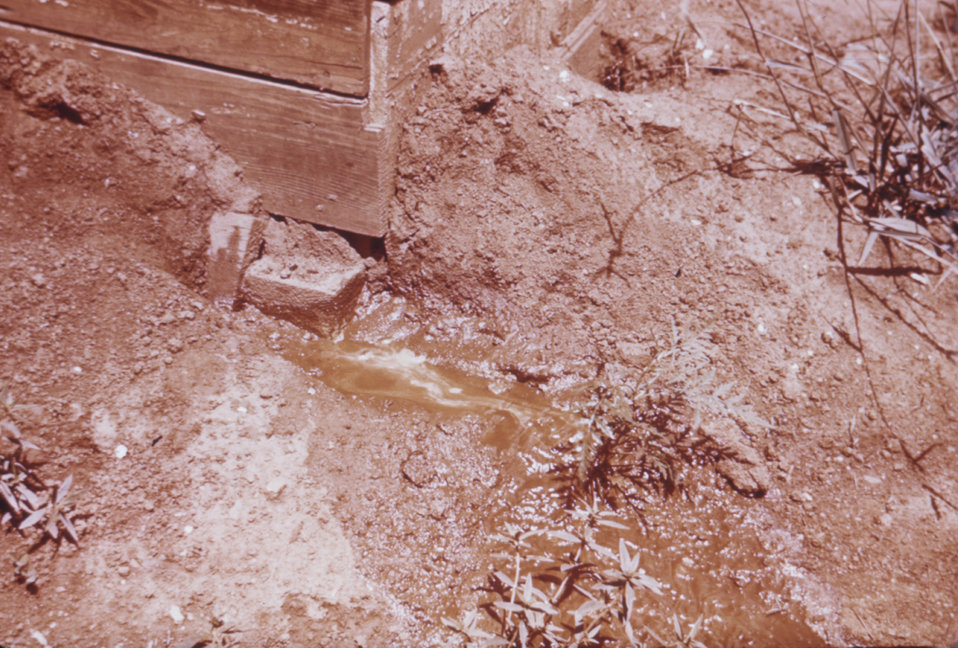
This was part of a series used to familiarize public health inspectors with sanitation conditions in migrant worker camps.